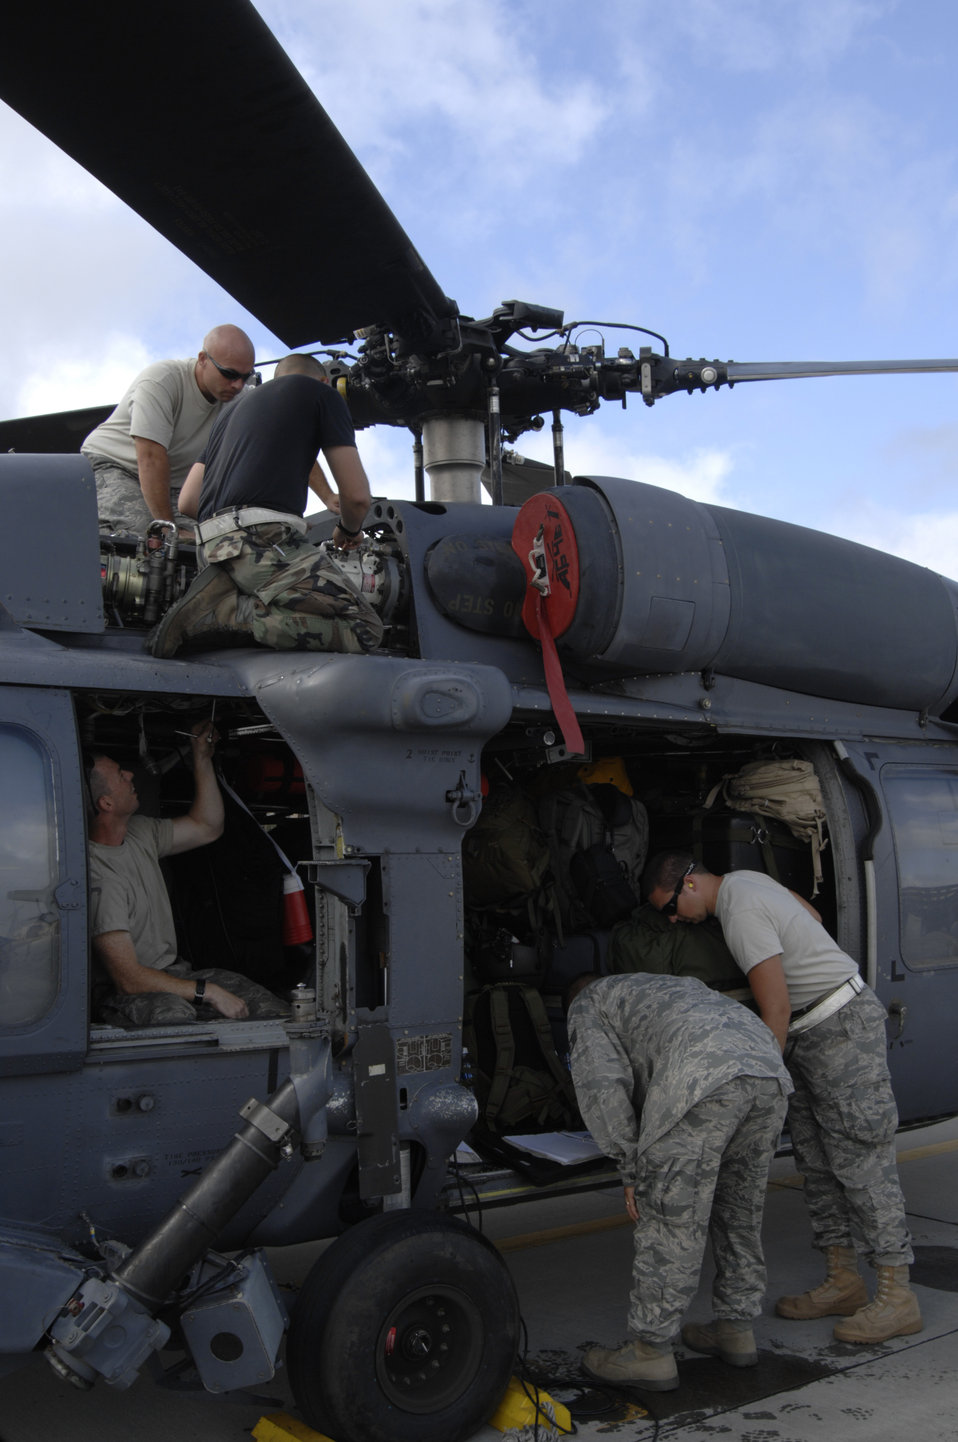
23rd Wing deploys

Airmen from the 723rd Aircraft Maintenance Squadron and 41st Rescue Squadron at Moody Air Force Base, Ga., surround a malfunctioning HH-60G Pave Hawk helicopter Sept. 12 to diagnose and repair the problem. The Airmen fixed the aircraft in time to join the formation of HH-60's back on the runway for take off to support rescue efforts in response to Hurricane Ike.